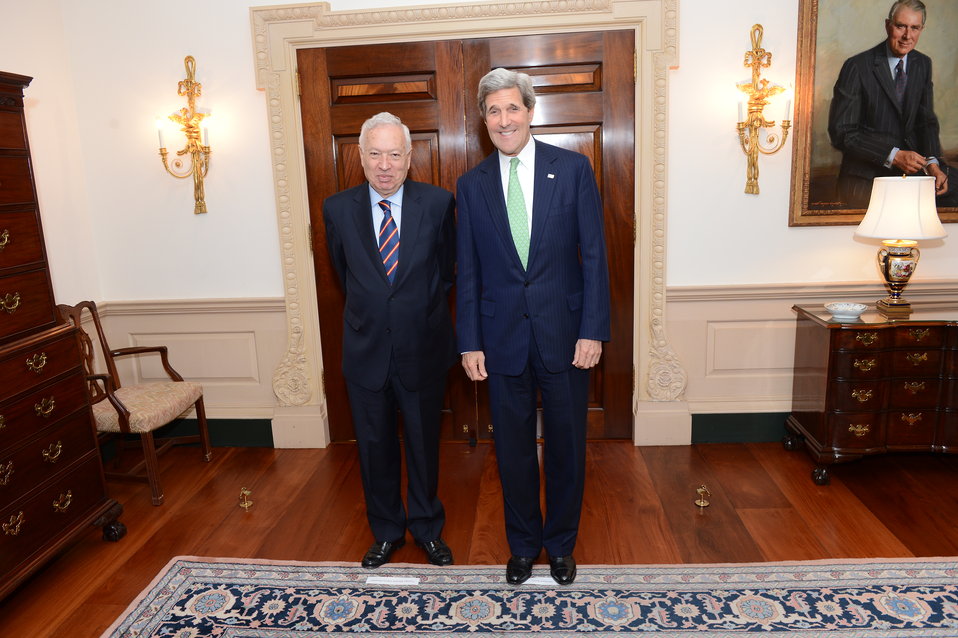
Secretary Kerry Meets With Spanish Foreign Minister Garcia-Margallo

U.S. Secretary of State John Kerry meets with Spanish Foreign Minister Jose Manuel Garcia-Margallo at the U.S. Department of State in Washington, D.C., on April 30, 2013.